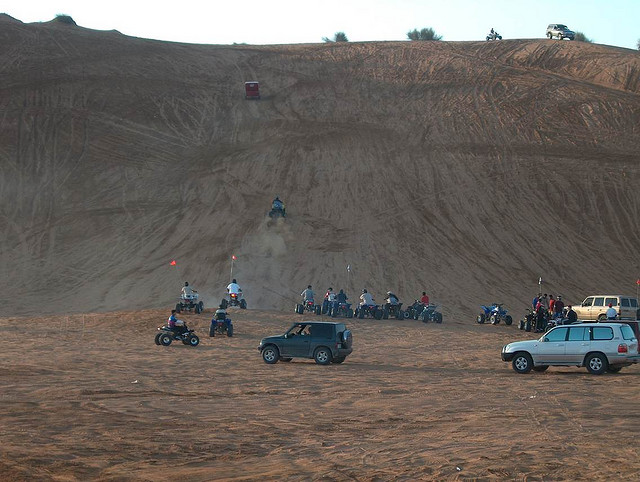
UAE Awafi Festival - Sand Dune Adventure in Awafi, UAE